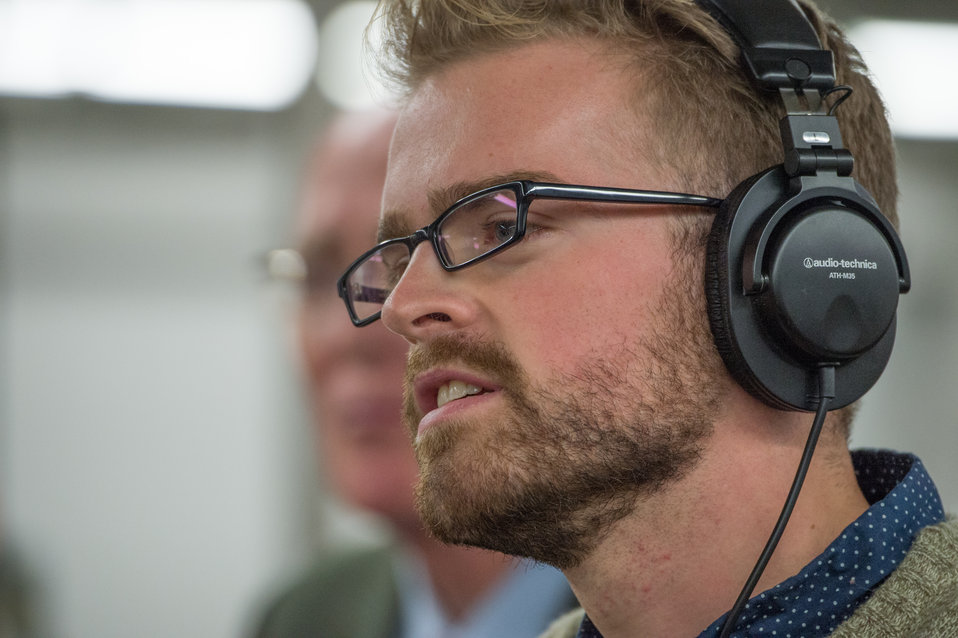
Harvest Public Media reporter Luke Runyon presents questions to Agriculture Secretary Tom Vilsack during his visit to the U.S. Department of Agriculture's (USDA) Agriculture Research Service (ARS) National Center for Genetic Resources Preservation (NCGRP) in Ft. Collins, CO on Wednesday, Nov. 6, 2013. NCGRP is the largest agricultural gene bank facility in the U.S. The NCGRP staff conducts groundbreaking research to develop more efficient and effective means for preserving plant and animal germplasm, and for better understanding the genetic structure of these invaluable materials. Gene banks around the world have adopted the research findings, preservation techniques, and specialized technology developed by the NCGRP: many international scientists travel to the NCGRP for research and training.